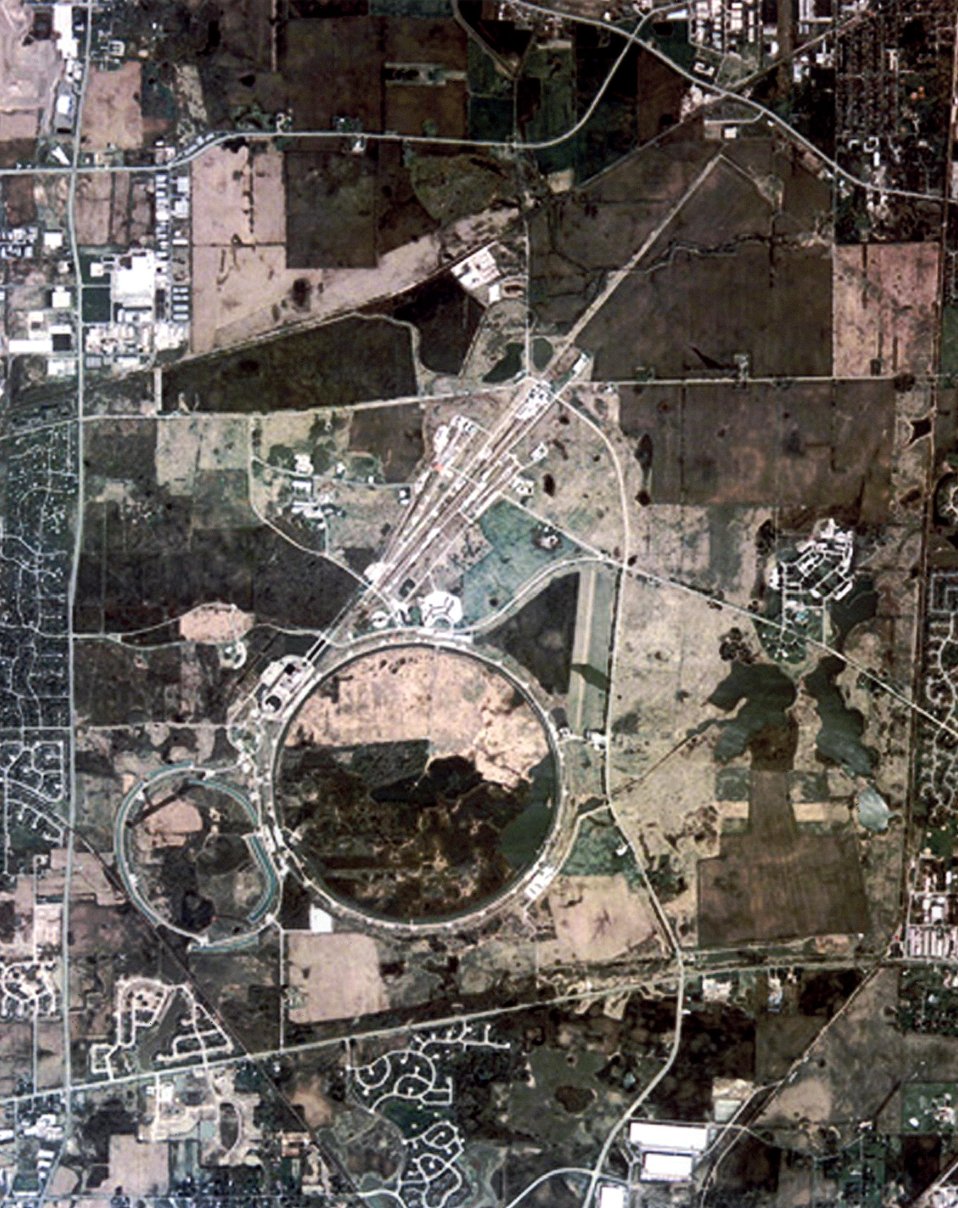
HIGH ALTITUDE VIEW OF FERMI NATIONAL ACCELERATOR LAB AND SURROUNDING AREA.